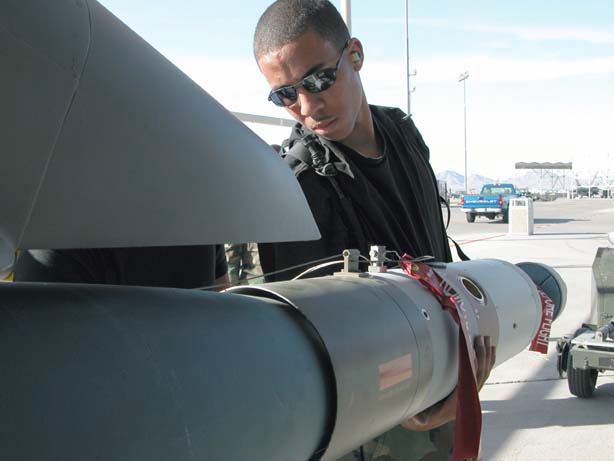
Load 'em up

NELLIS AIR FORCE BASE, Nev. -- Airman 1st Class Dustin Crowder helps install a laser-guided missile on an F-16 Fighting Falcon. Airman Crowder is a weapons specialist assigned to the 57th Aircraft Maintenance Squadron.